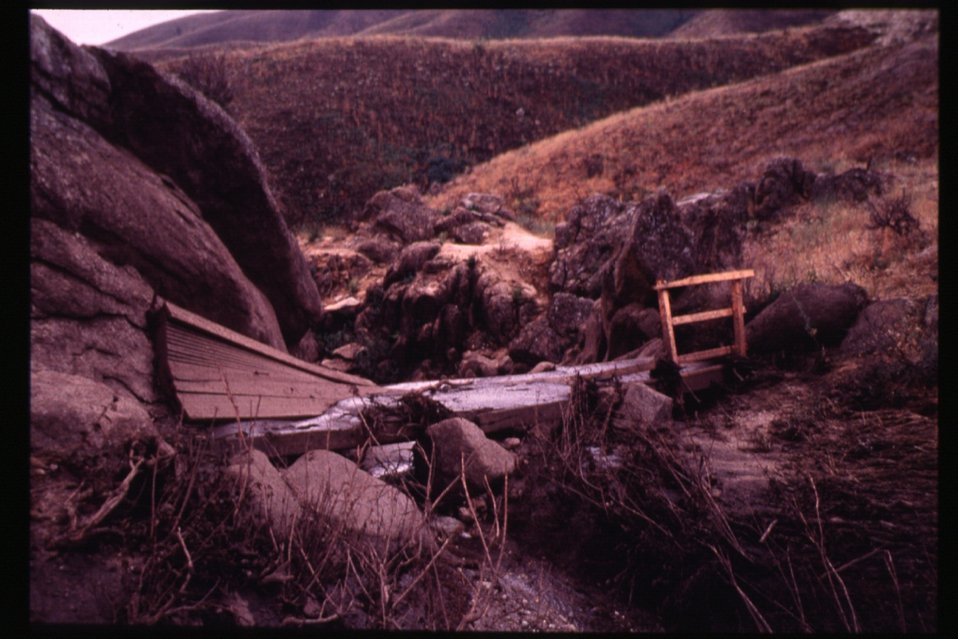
8th Street Fire Four Rivers Field Office LSRD Lower Snake River District